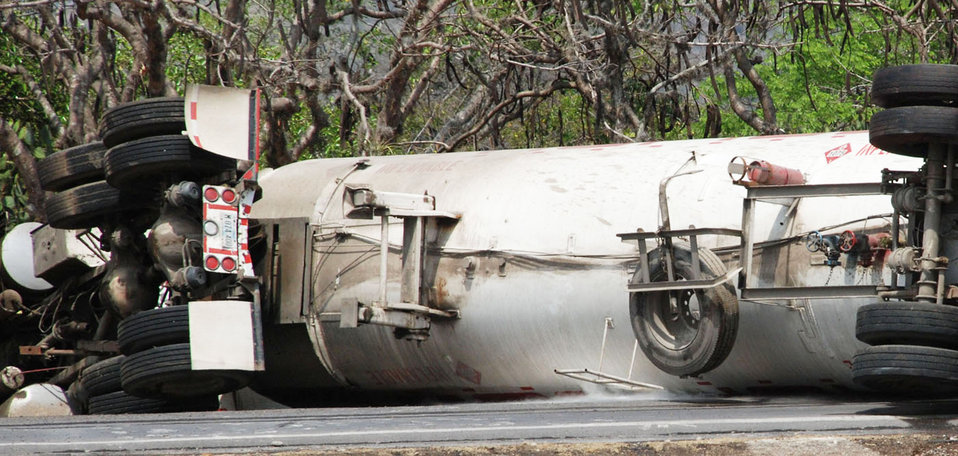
American servicemembers respond to overturned fuel tanker

A leak in an overturned fuel tanker caused the closure a Honduran highway for more than 24 hours March 13 8 kilometers north of Soto Cano Air Base, Honduras. The truck overturned after hitting a horse on the road around 8 a.m. Joint Task Force-Bravo firefighters and medics responded to provide assistance to the Comayagua fire department.